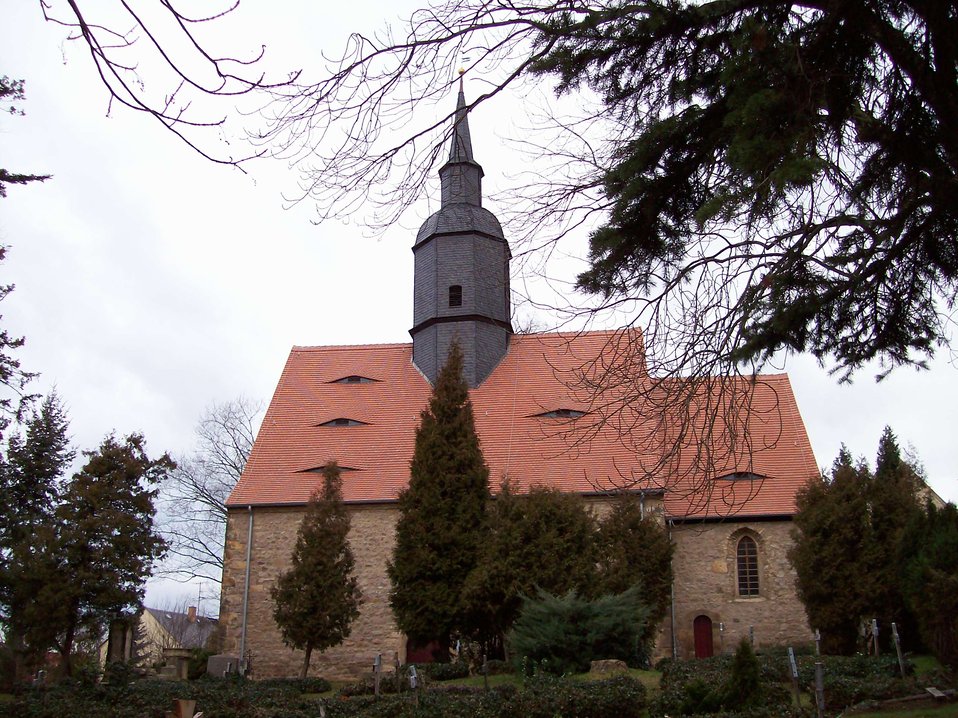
Deutsch: Jakobikirche Wilsdruff